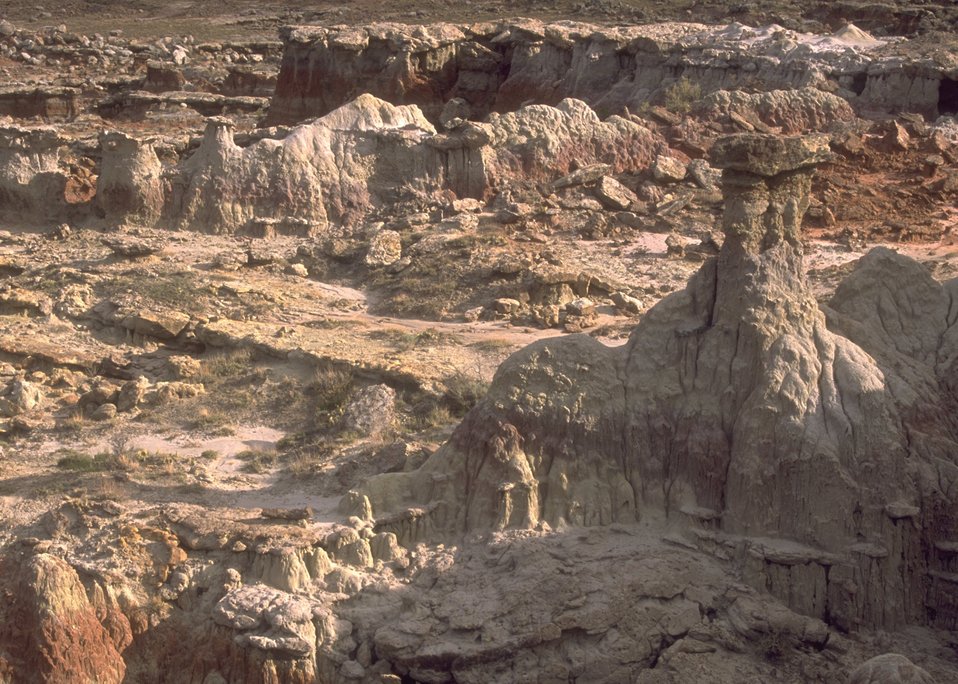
Gooseberry Interpretive Area, Worland Field Office.